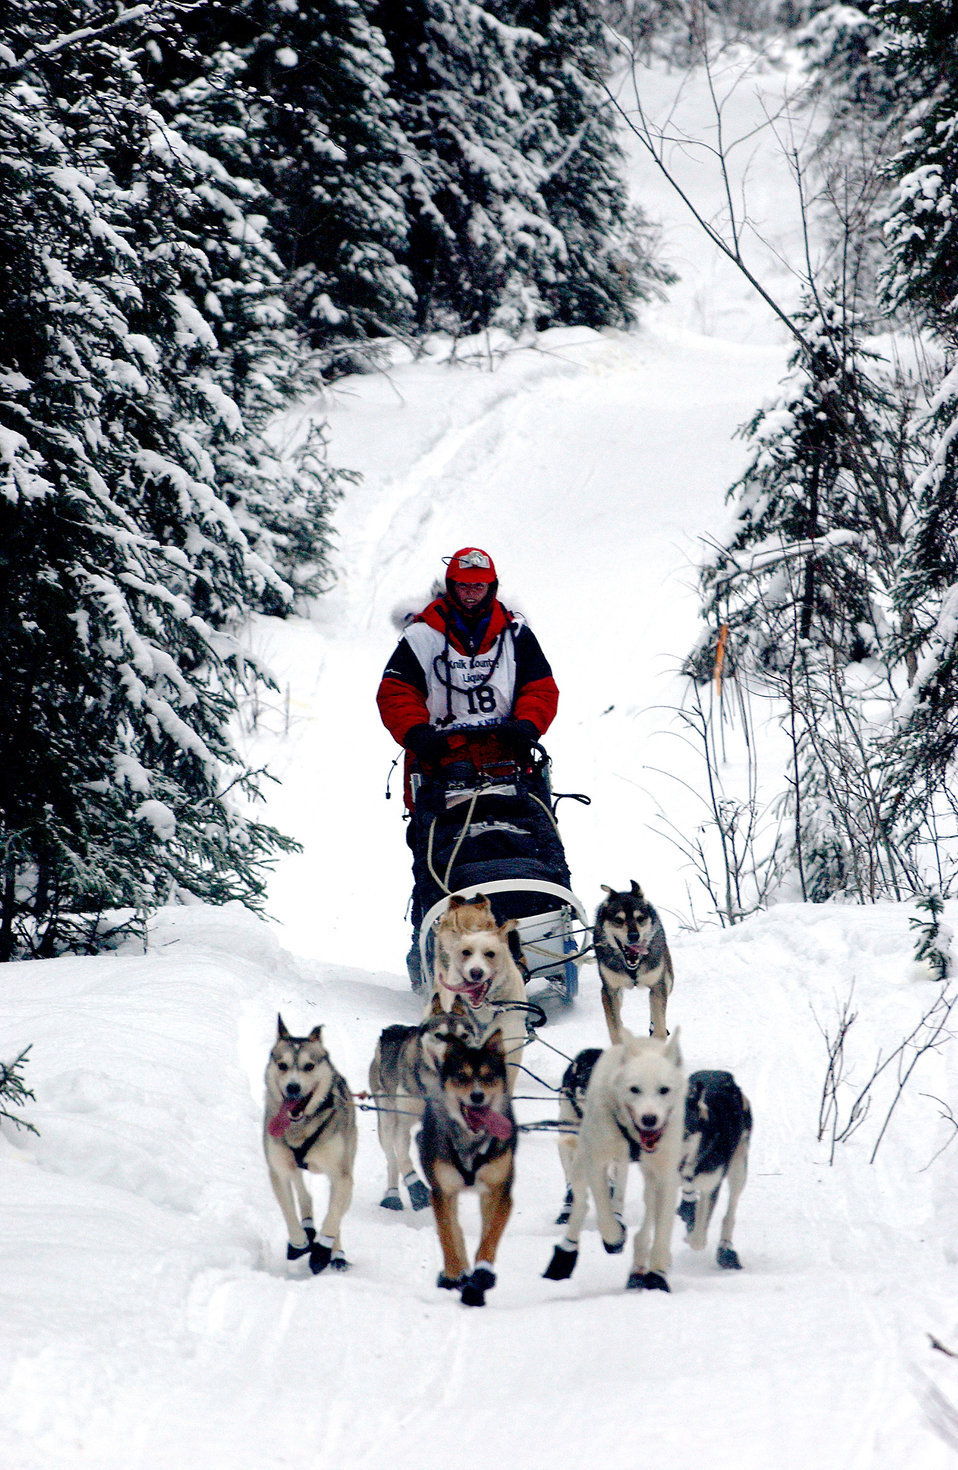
Winter race

KNIK, ALASKA -- Lt. Col. Michele Provost sleds along the Knik 200 Sled Dog Race. She completed the 200 mile race in 29 hours and 5 minutes, including a six-hour mandatory rest for the dogs. Colonel Provost is an orthopedic surgeon with the 3rd Medical Group at Elmendorf Air Force Base, Alaska.